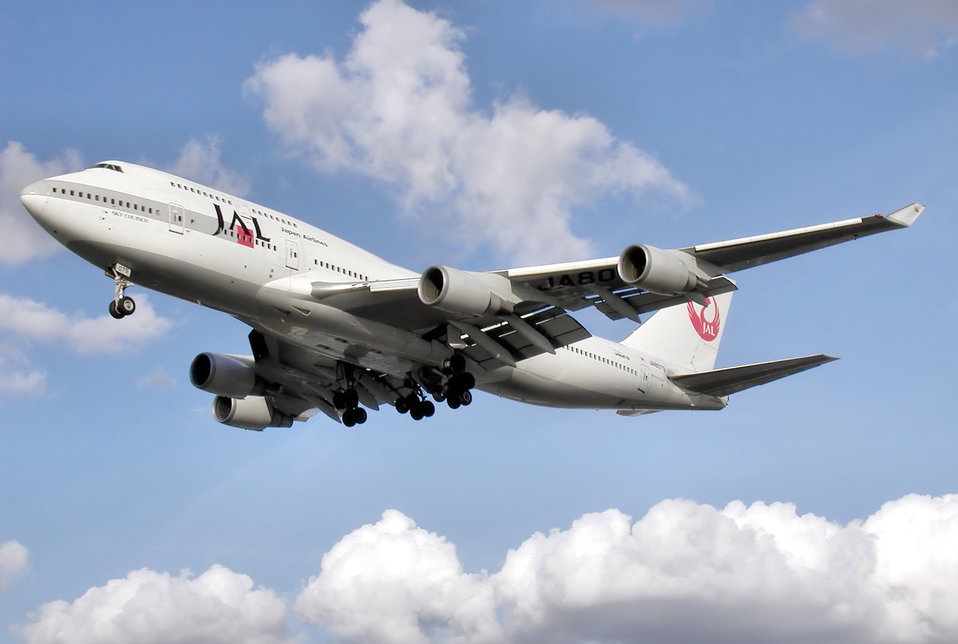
Japanairlines b747-400 ja8079 arp